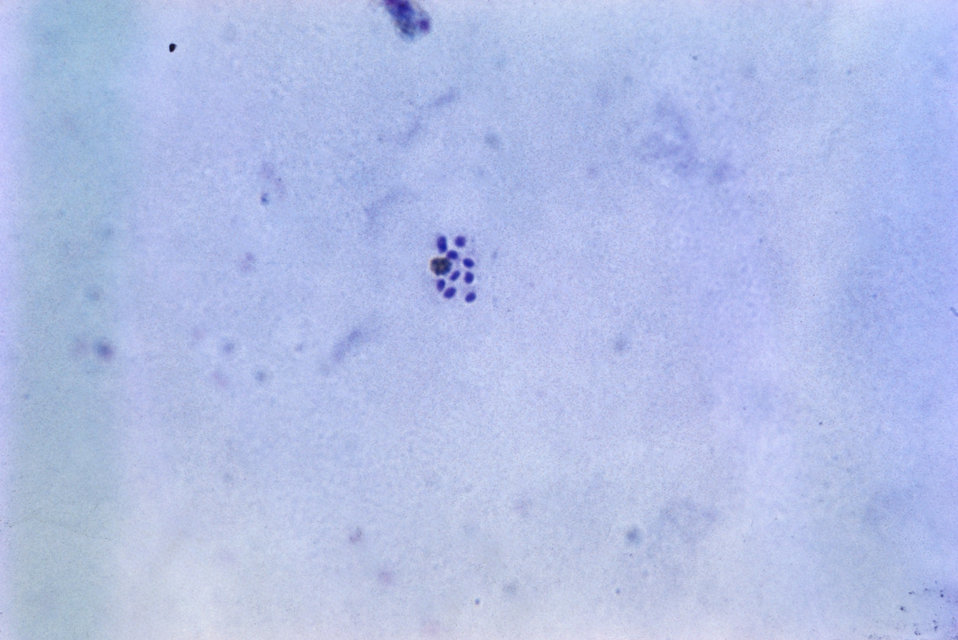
Human malaria parasite.